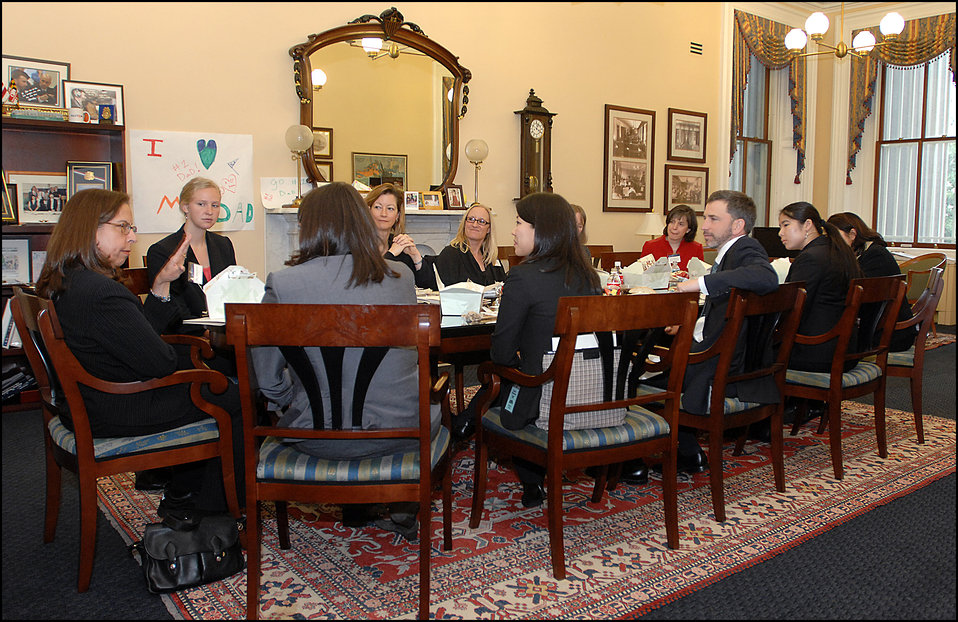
Women in Finance Symposium, 03/29/2010

One of the working breakout lunches during the Women in Finance Symposium at the Treasury on March 29, 2010.